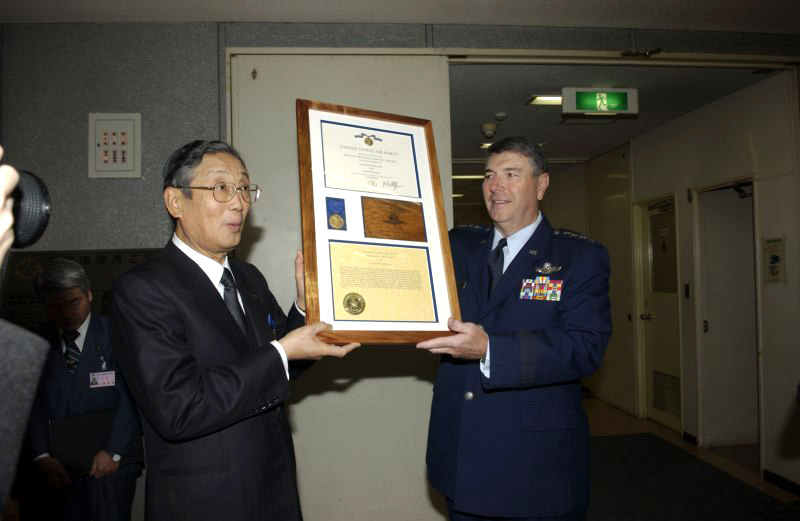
PACAF recognizes support by Japan

Gen. Paul V. Hester presents the Air Force Exemplary Civilian Service award to Misawa City Mayor Shigeyoshi Suzuki Jan. 31 in Misawa City. General Hester is the Pacific Air Forces commander.